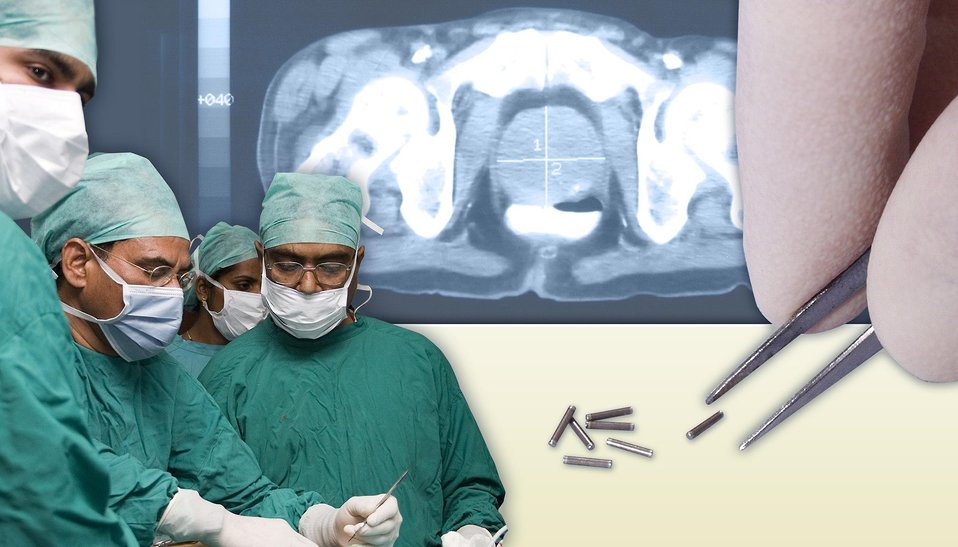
Isoray's brachytherapy seeds use Cesium-131, which emits a low-energy x-ray that effectively provides a cancer-killing dose to a tumor in a short period of time.